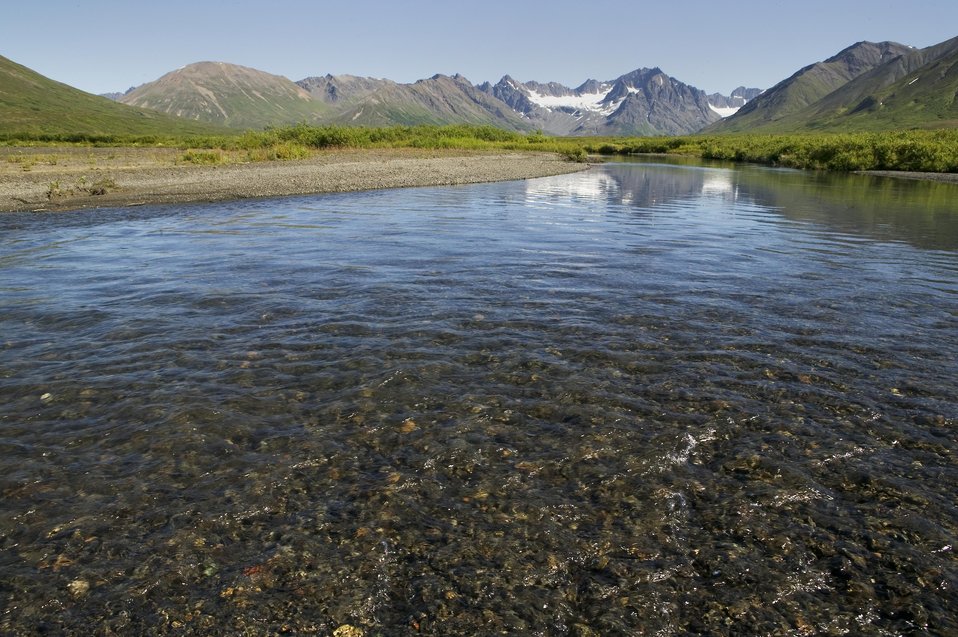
Togiak Nation Wildlife Refuge